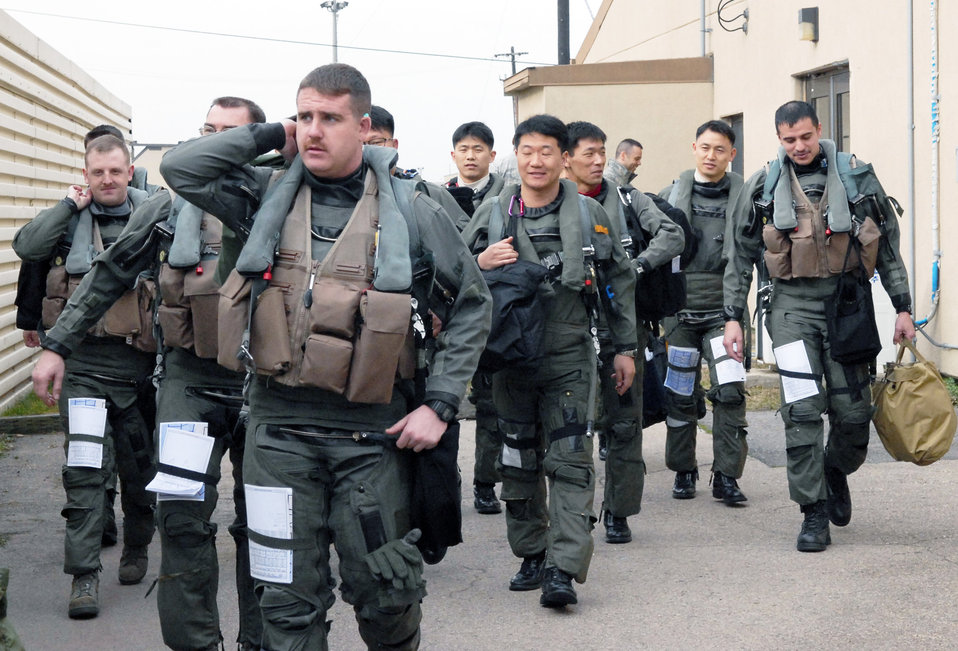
Buddy Wing brings Kunsan, South Korean airmen closer

South Korean and American Airmen step to their jets in preparation for takeoff during the Buddy Wing program March 11 at Kunsan Air Base, South Korea. The Buddy Wing program is designed to increase United States Air Force and South Korean air force interoperability.